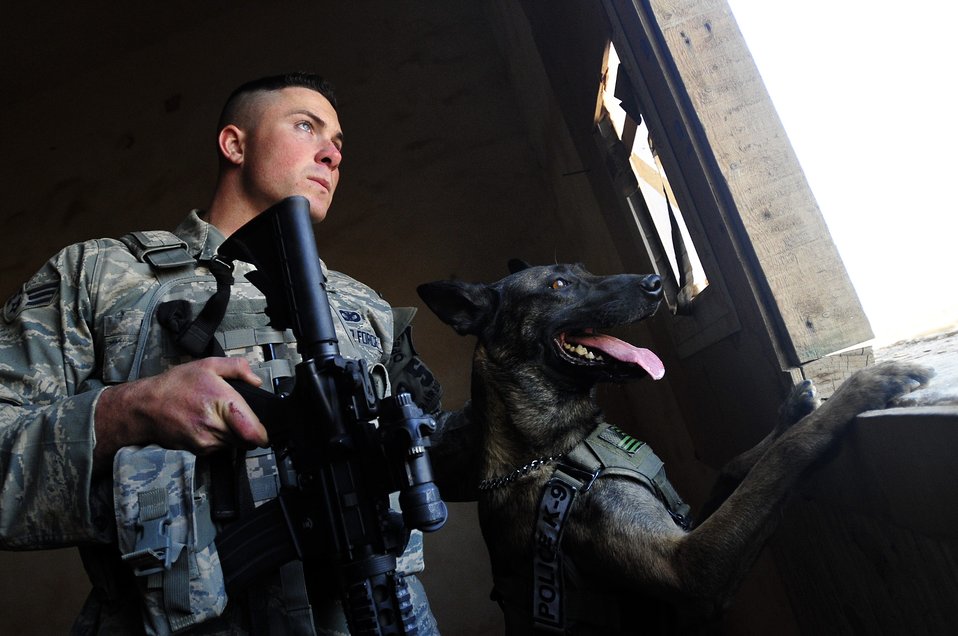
An Airman's Best Wingman

Senior Airman Stephen Hanks, 447th Expeditionary Security Forces Squadron military working dog handler, and Geri, 447th ESFS patrol and explosive detector dog, look through a window while securing an abandoned building on a routine patrol on Sather Air Base in Baghdad, Iraq, Dec. 11, 2011. For the last six months Geri and Hanks, have been supporting Operation New Dawn by providing explosive and psychological deterrence. Hanks and Geri are deployed from Patrick Air Force Base, Fla. Hanks is from Amherst, Mass.